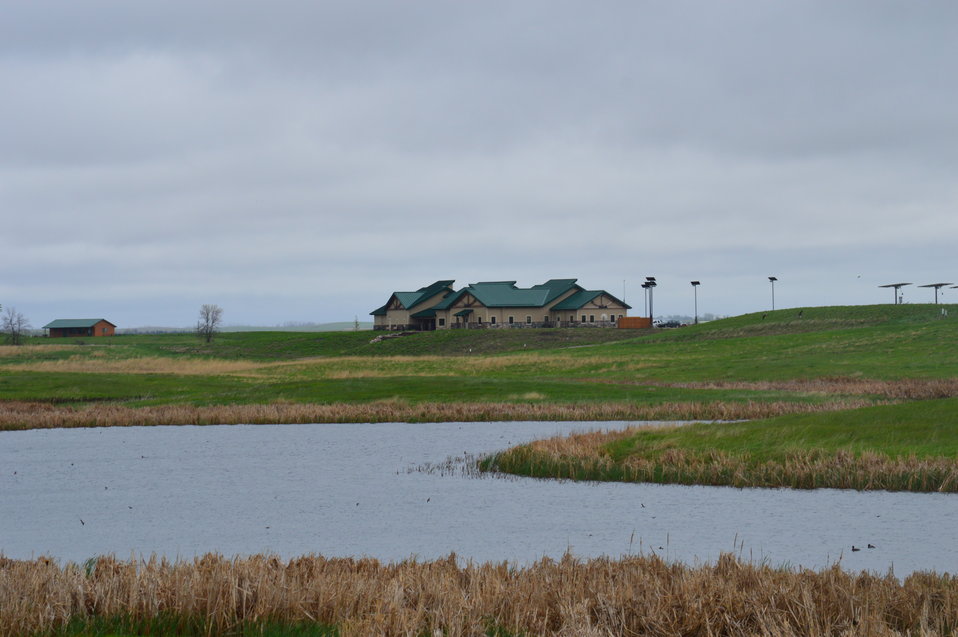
View of the Visitor Center and offices

Scenery and wildlife and Audubon National Wildlife Refuge in North Dakota.